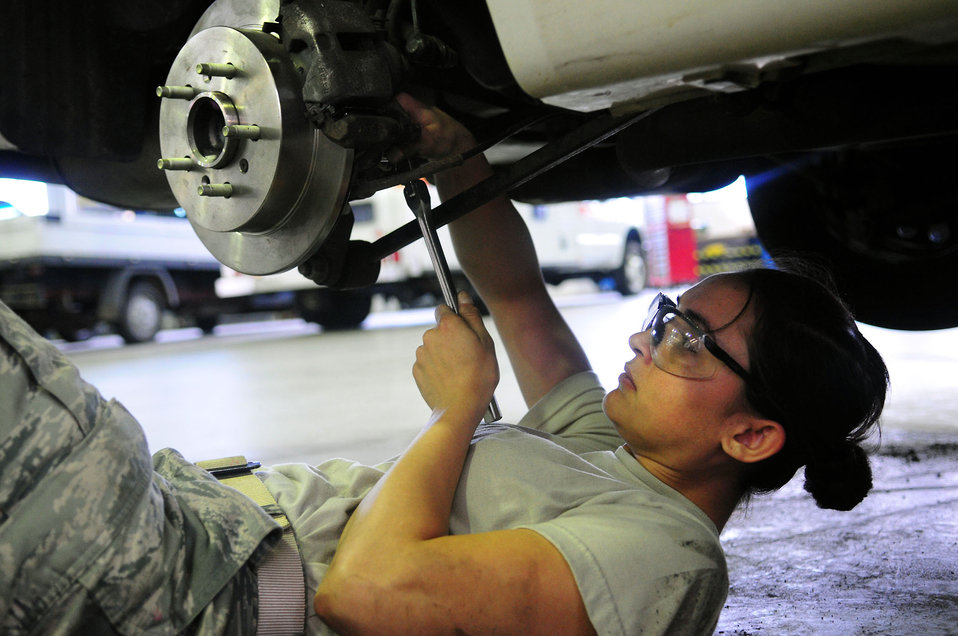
Gimme a brake

Airman 1st Class Claudia Bone makes a brake adjustment on a vehicle at Ramstein Air Base, Germany, July 29, 2010. She is with the 86th Vehicle Readiness Squadron and maintains government vehicles.